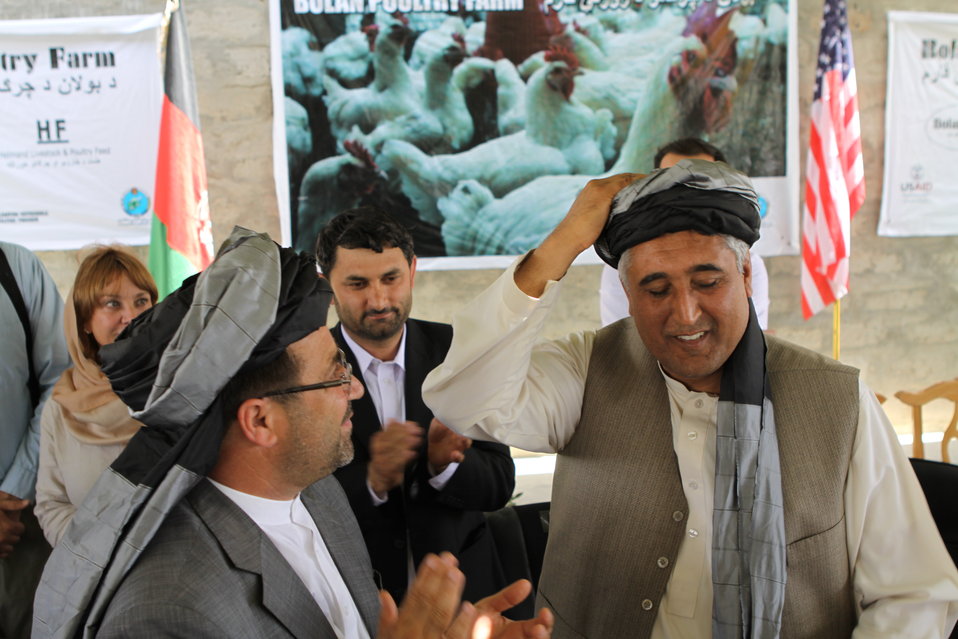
Bolan Poultry Farm